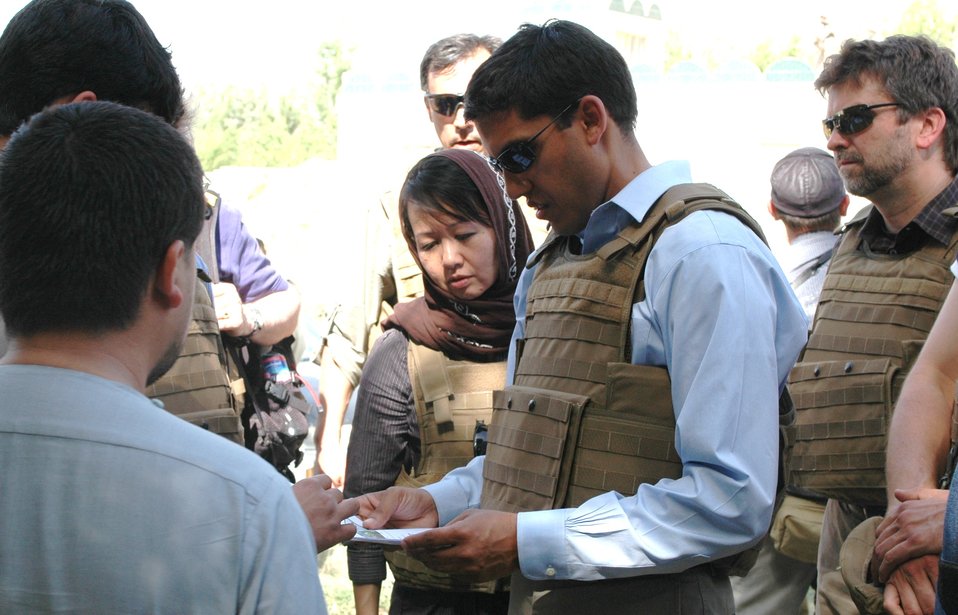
Dr Shah Visits Argandab April 10, 2010